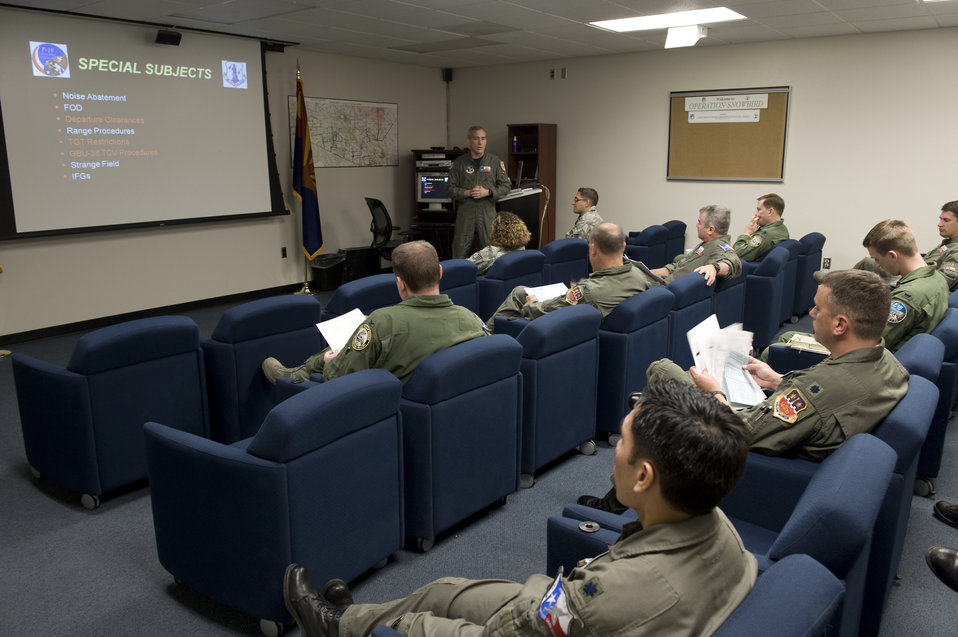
Airmen train next generation

Pilots with the Air National Guard's 149th Fighter Wing from San Antonio attend a mass mission brief prior to their sorties April 23 at Davis-Monthan Air Force Base, Ariz. The pilots are a mix of instructors and students participating in Exercise Coronet Cactus.